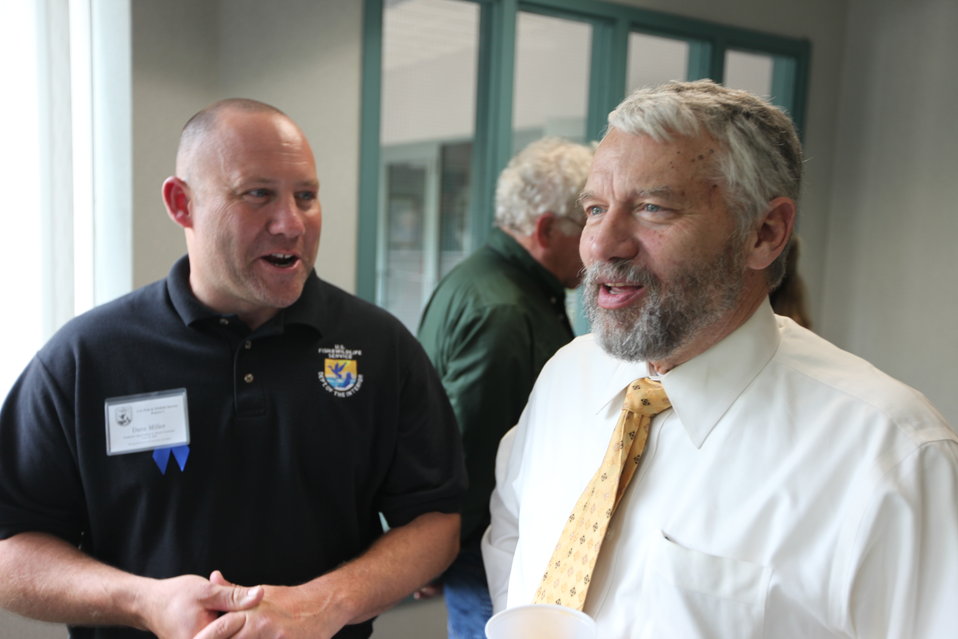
Northeast Region Employee Appreciation Awards

Dave Miller and Rowan Gould.